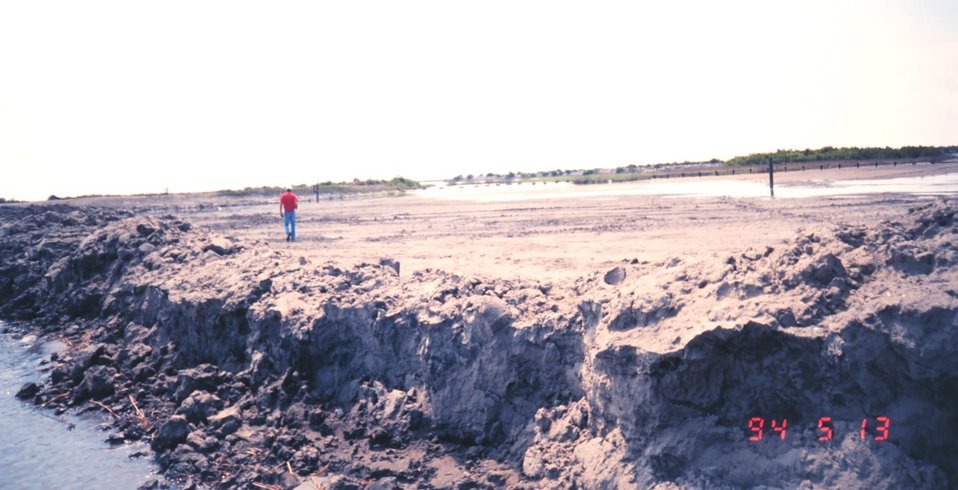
New land created by dredging operation behind temporary levee will be planted with Spartina alterniflora, smooth cordgrass, to form a new marsh area.